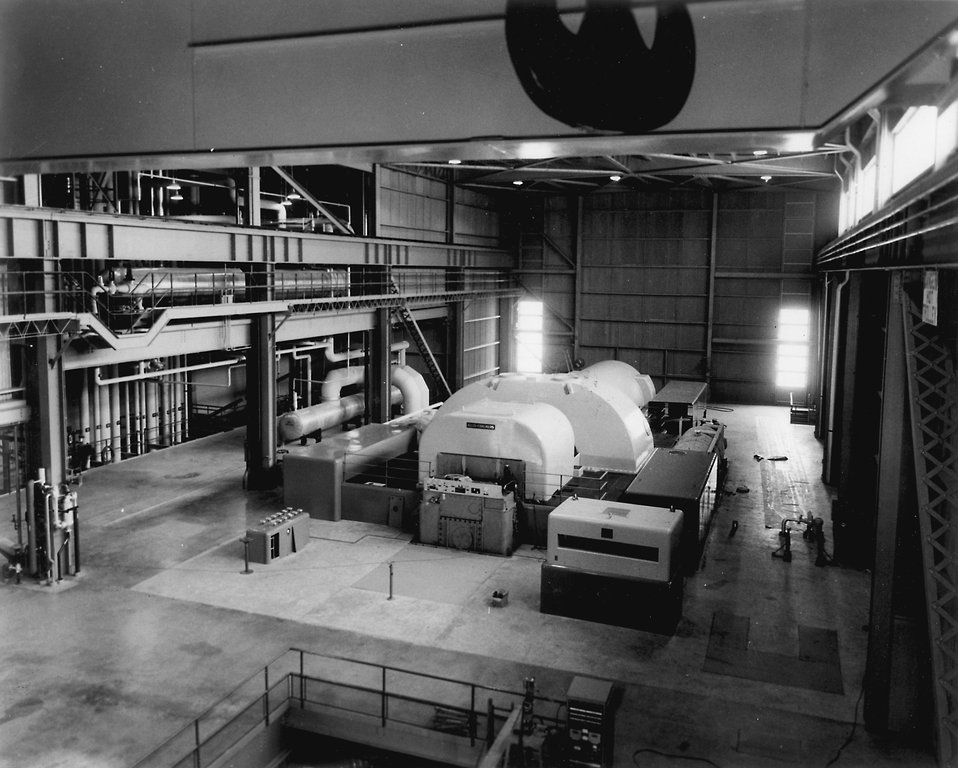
Enrico Fermi Atomic Power Plant, located at Lagoona Beach on Lake Erie, near Monroe, Michigan, about 35 miles southwest of Detroit. Circa 1972.